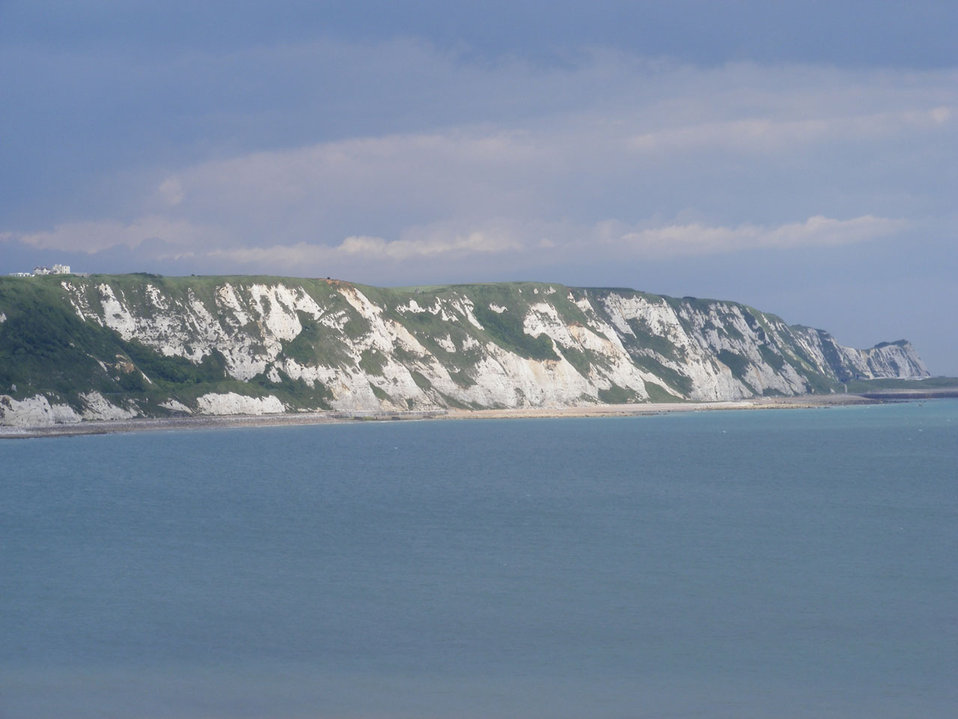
The white cliffs of dover

One aspect of the white cliffs of dover.